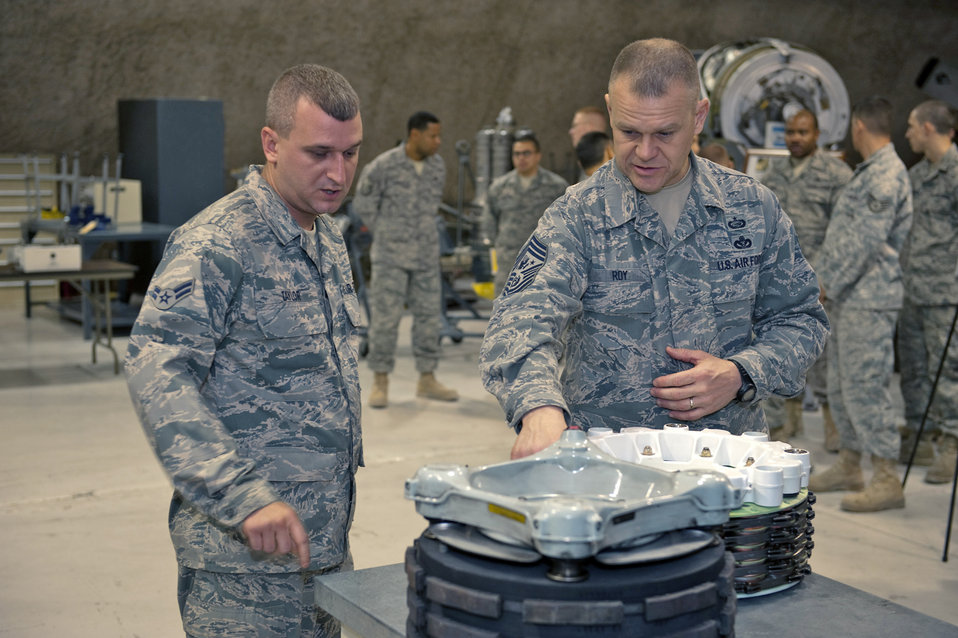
CMSAF Visits Southwest Asia

Chief Master Sgt. of the Air Force James A. Roy receives a briefing from Airman 1st Class Marcus Taylor about his role in maintaining aircraft brakes, Nov. 30, 2009. Chief Roy is touring the U.S. Air Forces Central Command area of responsibility, visiting with Airmen and addressing numerous issues affecting servicemembers who are deployed in support of operations Iraqi Freedom and Enduring Freedom.